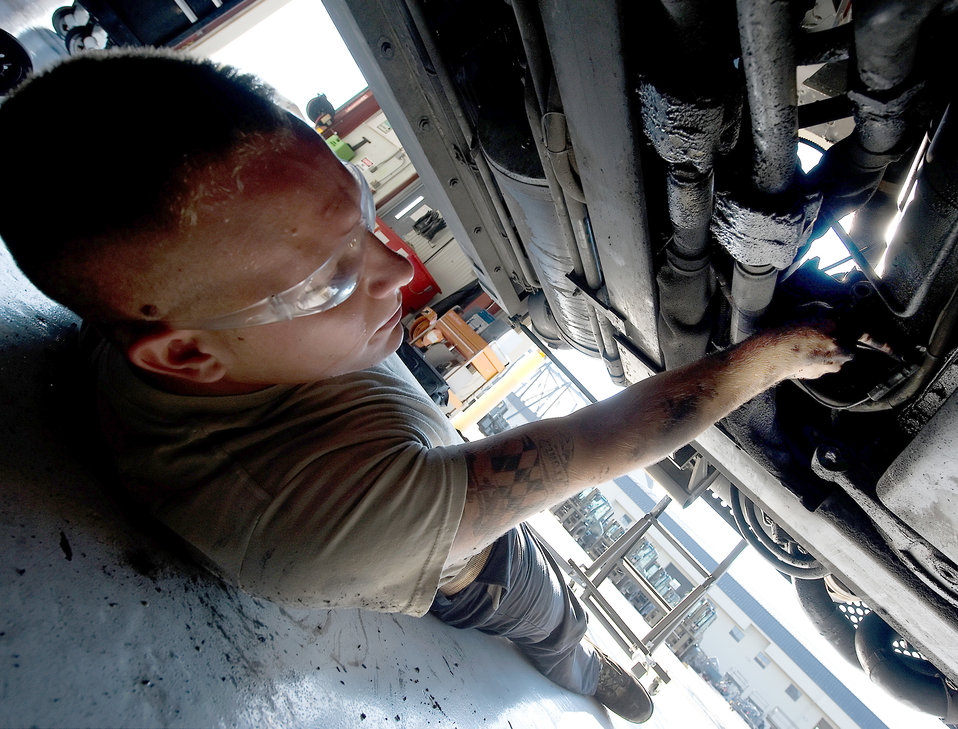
Fix it and forget it

Senior Airman Sammy Anderson performs maintenance on a cargo loader July 27, 2011, at Dover Air Force Base, Del. Anderson is a material handling equipment journeyman assigned to the 436th Logistics Readiness Squadron.